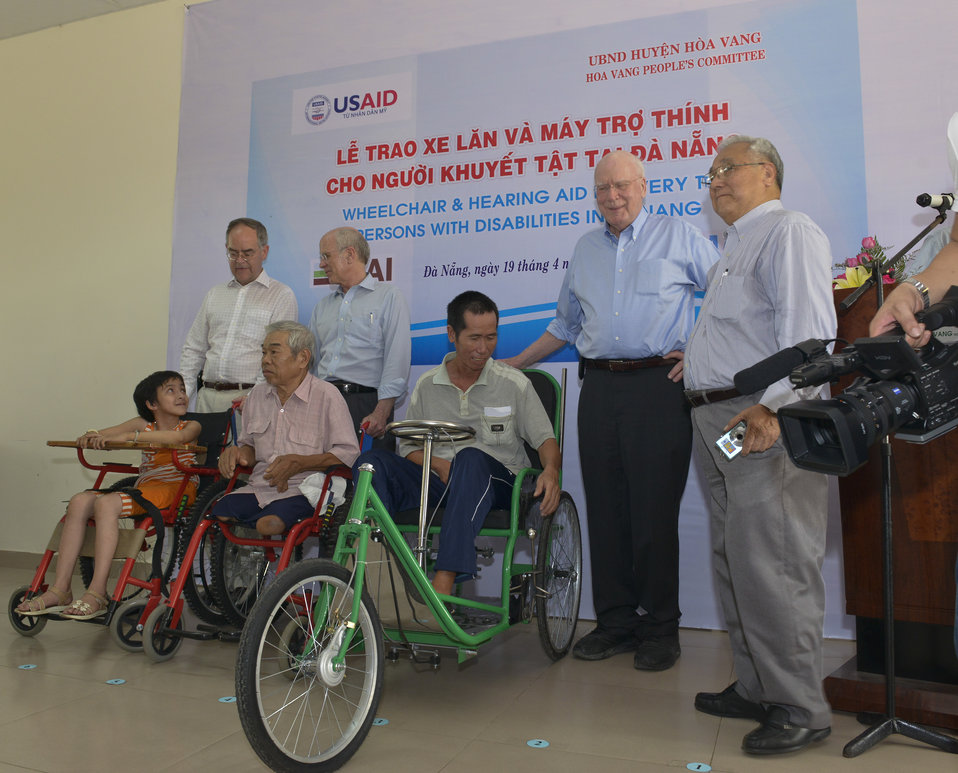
U.S. Congressional delegation attends a wheelchairs and hearing aids distribution event in Danang

Hoa Vang District Hospital, Danang, April 19, 2014.